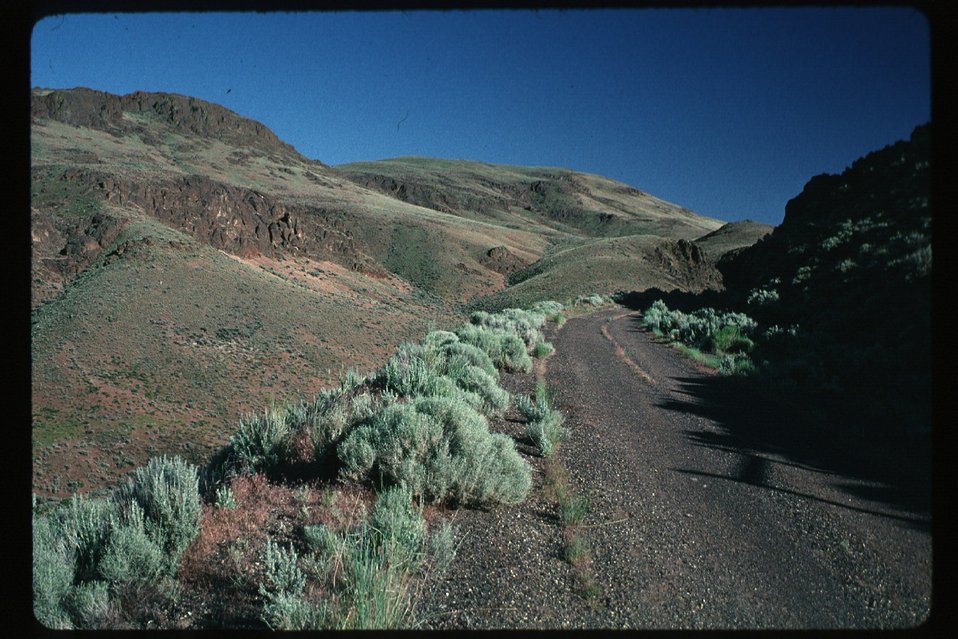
Desert Road Rangeland Four Rivers Field Office LSRD Lower Snake River District